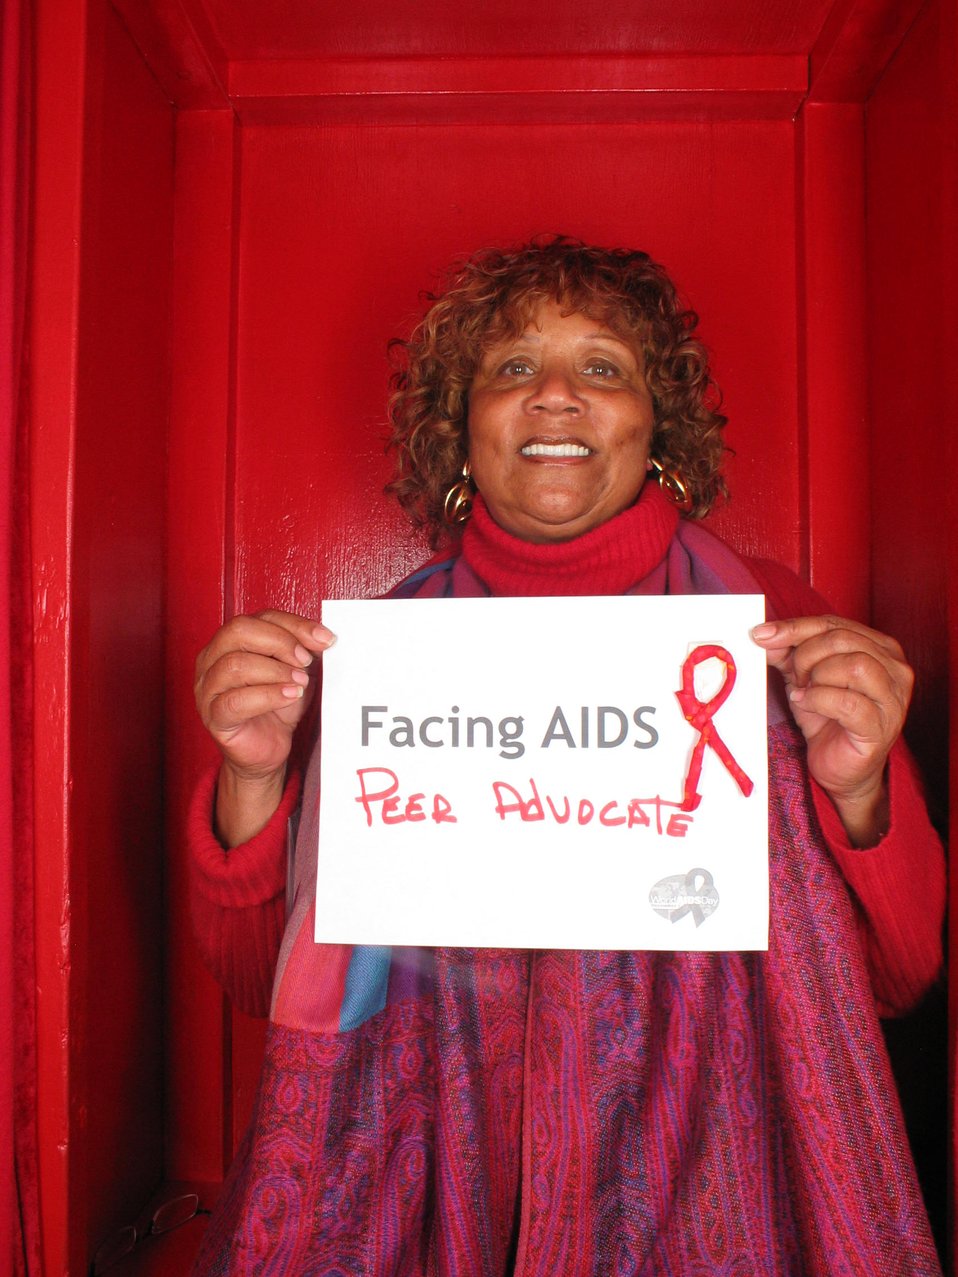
Facing AIDS Peer Advocate